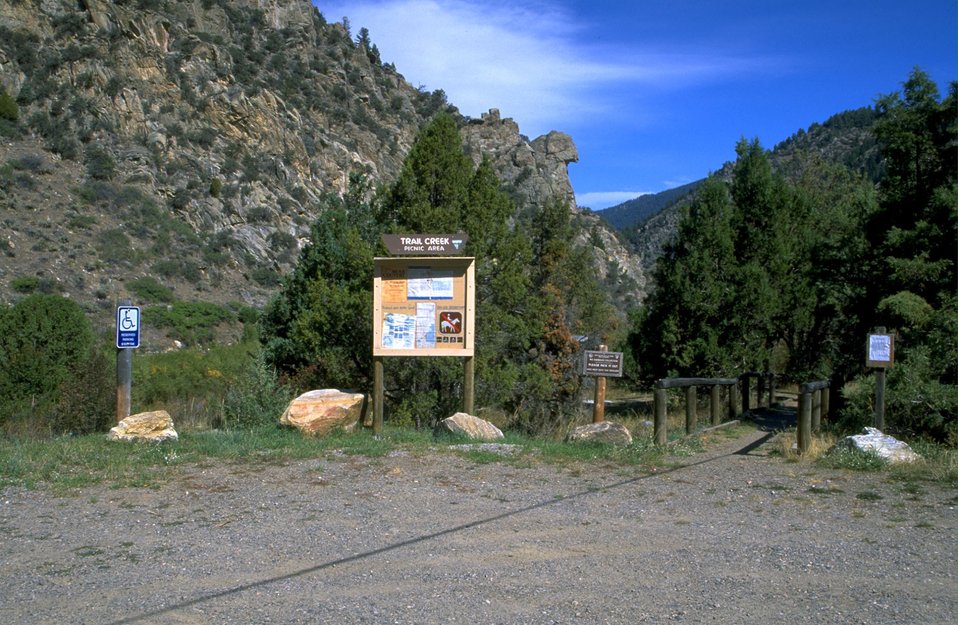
Trailhead and Kiosk at Trail Creek Picnic Area